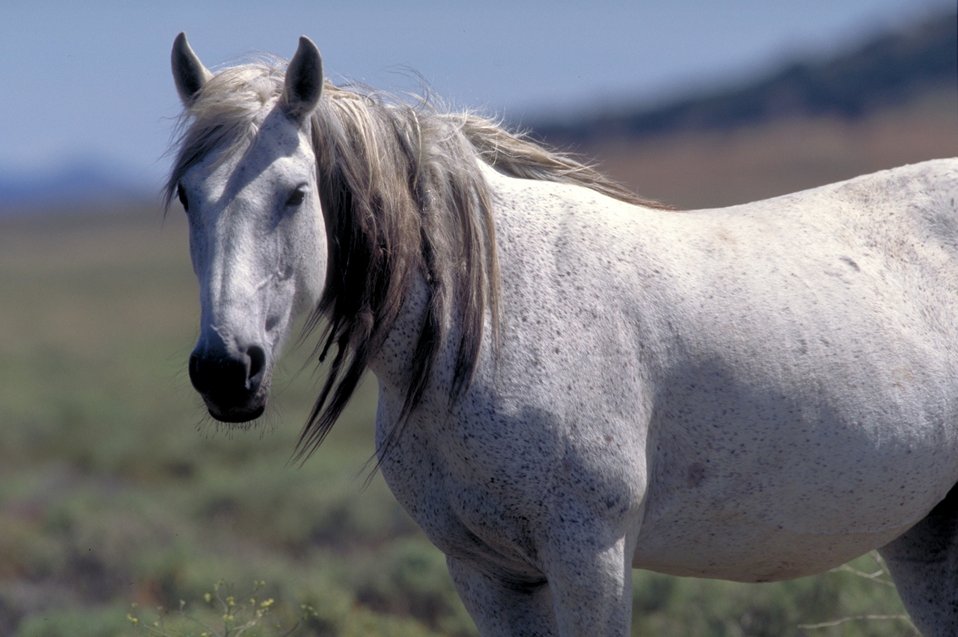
Onaqui Herd near Dugway, Utah.